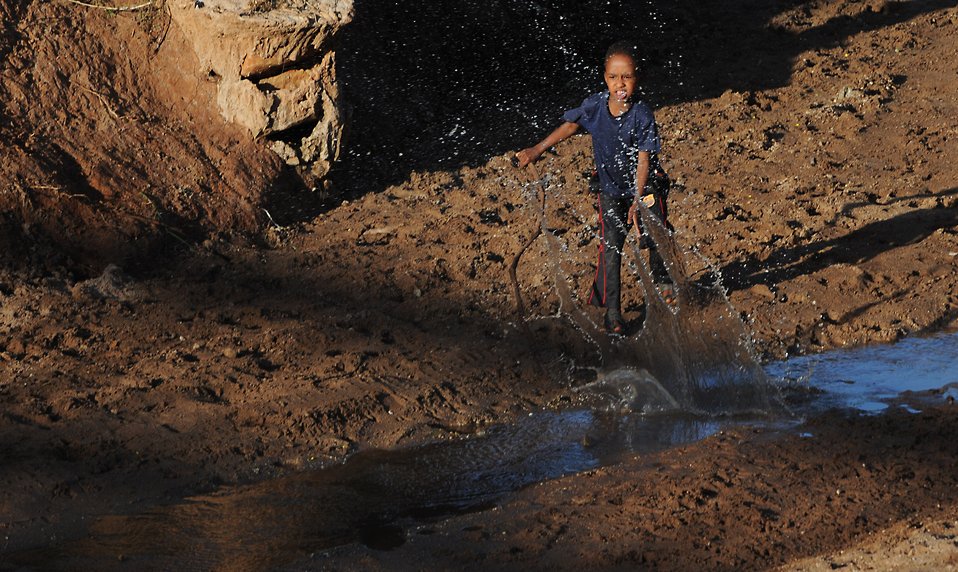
144 hours in Ethiopia: Into the Land of Plenty

A young boy uses a stick to splash the water running beneath the recently completed bridge in Negele Borena, Ethiopia, Dec. 5, 2011. Although the water level is currently low, during times of heavy rainfall it can exceed depths of 10 feet, with currents strong enough to carry people and livestock away.